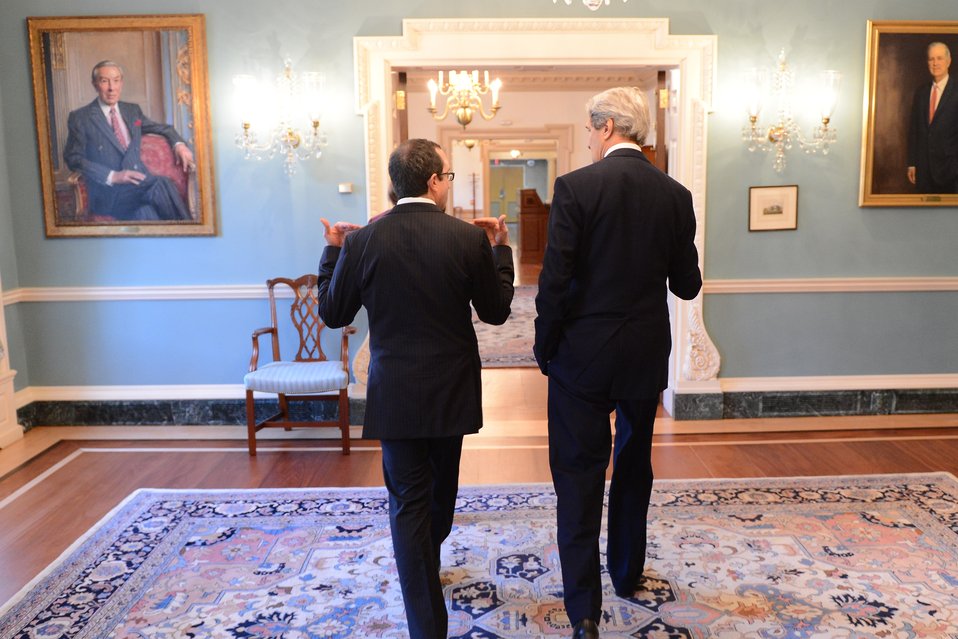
Secretary Kerry Chats With Executive Secretary Bass

U.S. Secretary of State John Kerry and the Executive Secretary of the Department John Bass chat in the Treaty Room reception area adjacent to the Secretary’s office suite in the U.S. Department of State, Washington D.C., February 4, 2013.